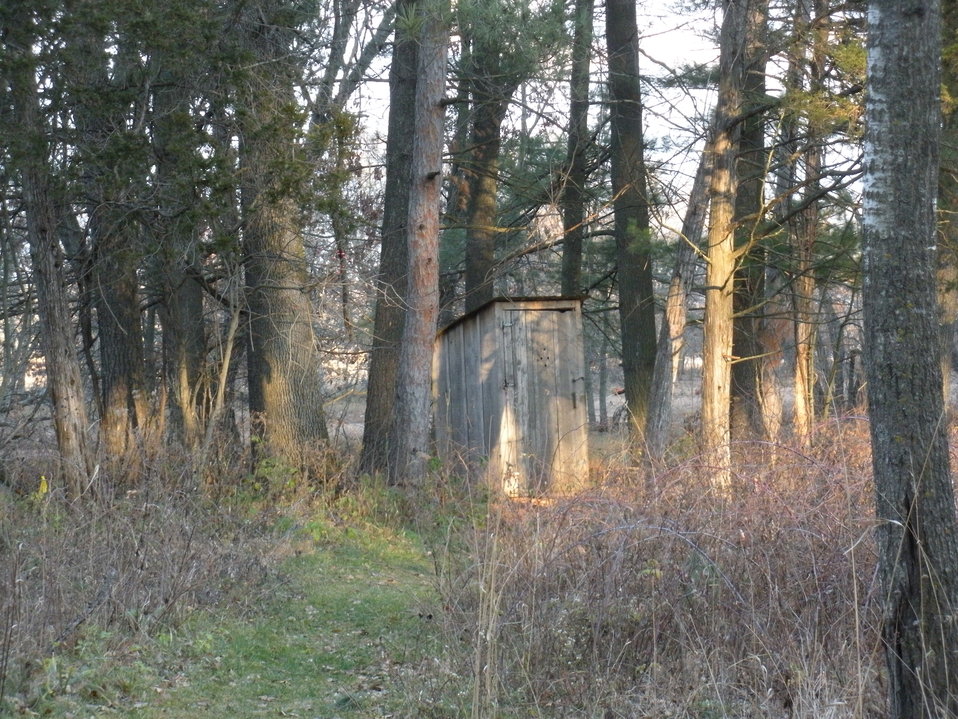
The 'Parthenon'

Aka an outhouse!